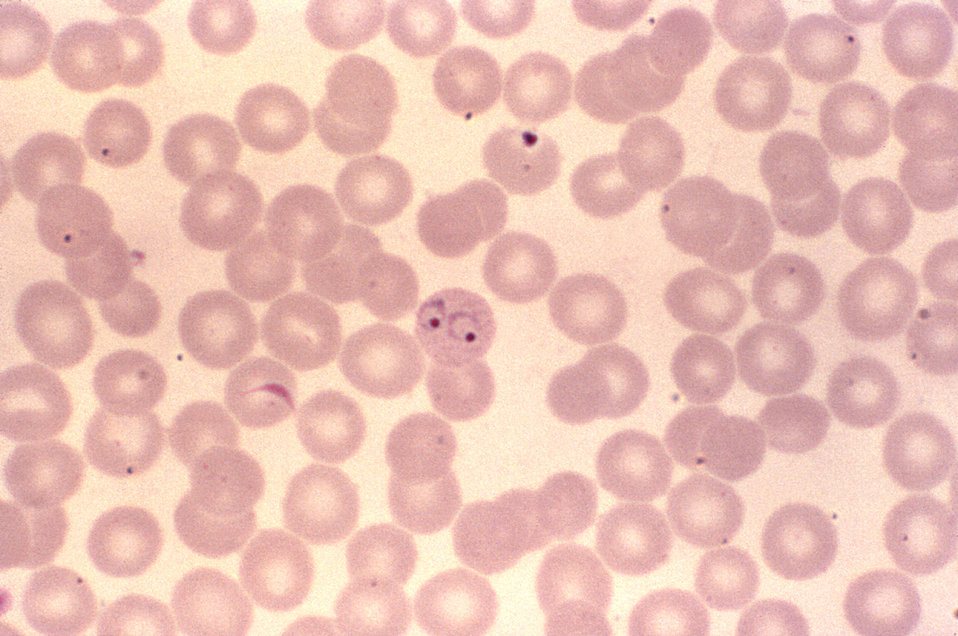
This thin film Giemsa stained micrograph revealed a single RBC containing two ring-form Plasmodium vivax trophozoites.